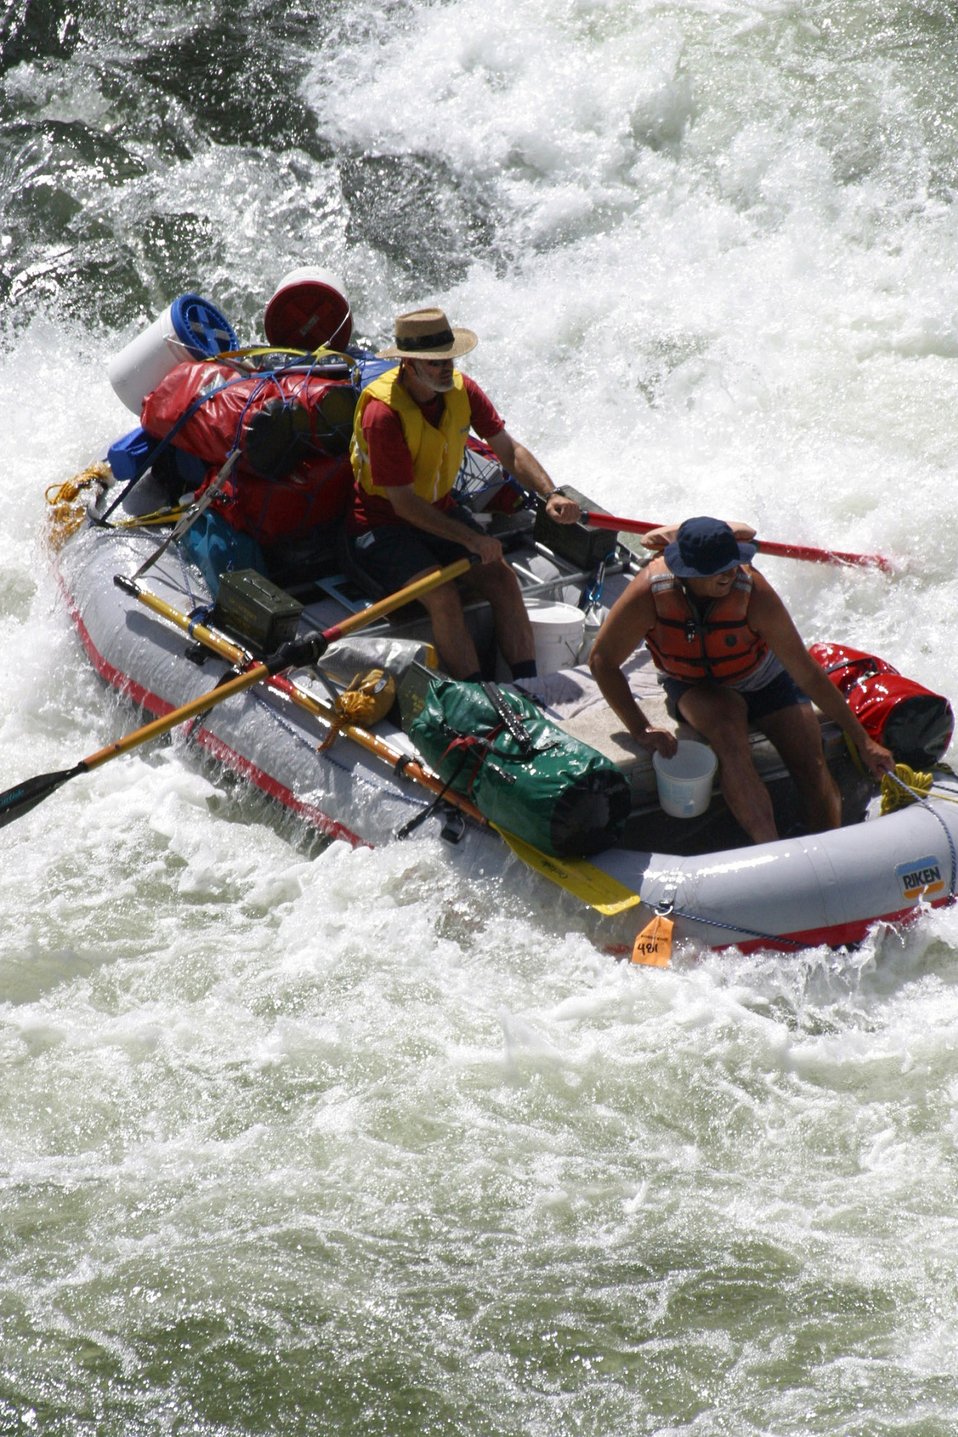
Boater at Grave Creek Falls